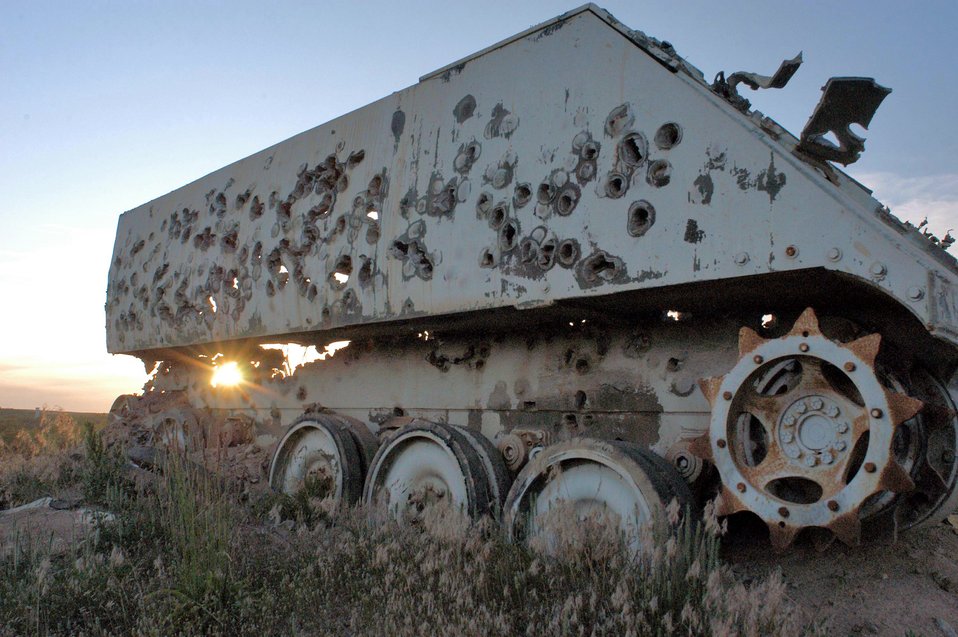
Range keepers help pilots stay combat ready

Used as a gunnery target at Cannon Range near Fort Leonard Wood, Mo., this armored personnel carrier has been hit repeatedly by 30mm bullets from the 442nd Fighter Wing's A-10s. Cannon Range, run by the Missouri Air National Guard, is vital to training the wing's A-10 pilots, as well as pilots from other Air Force Reserve, Air National Guard and Regular Air Force units across the country.